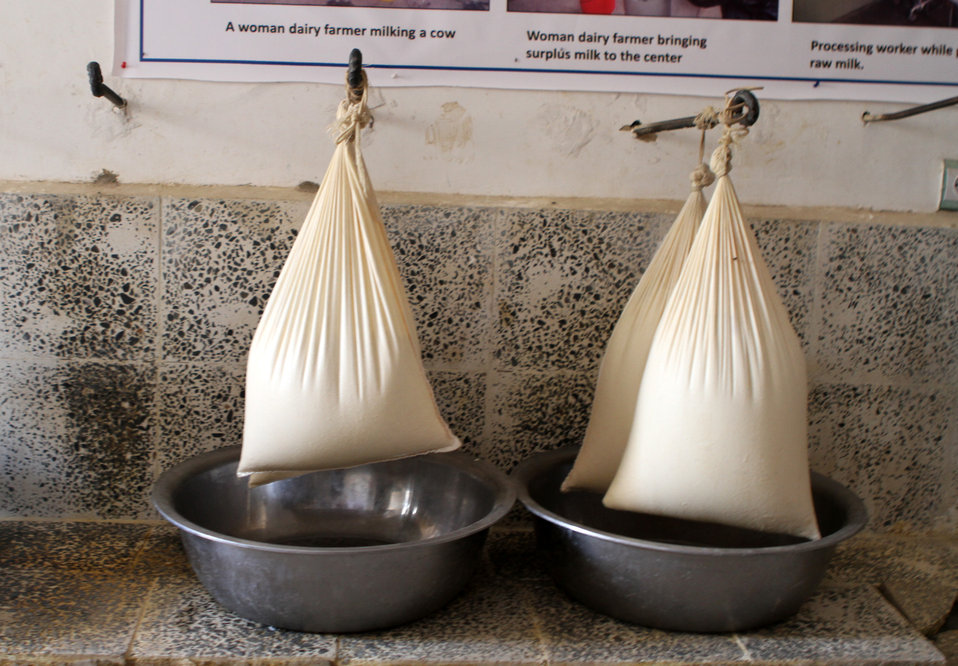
USAID funded Milk Processing Center